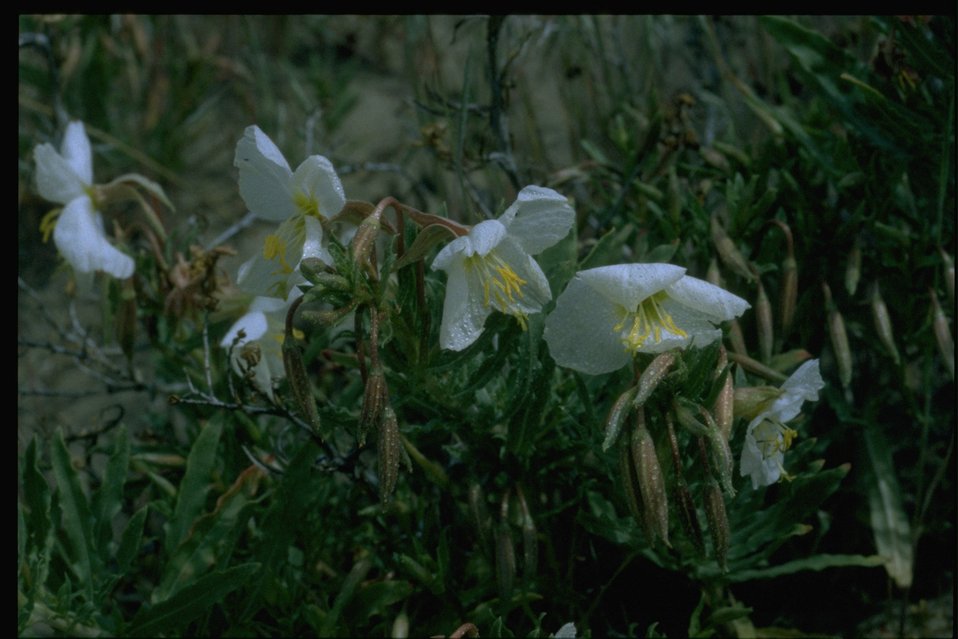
Medium shot of Sand Primrose habitat.